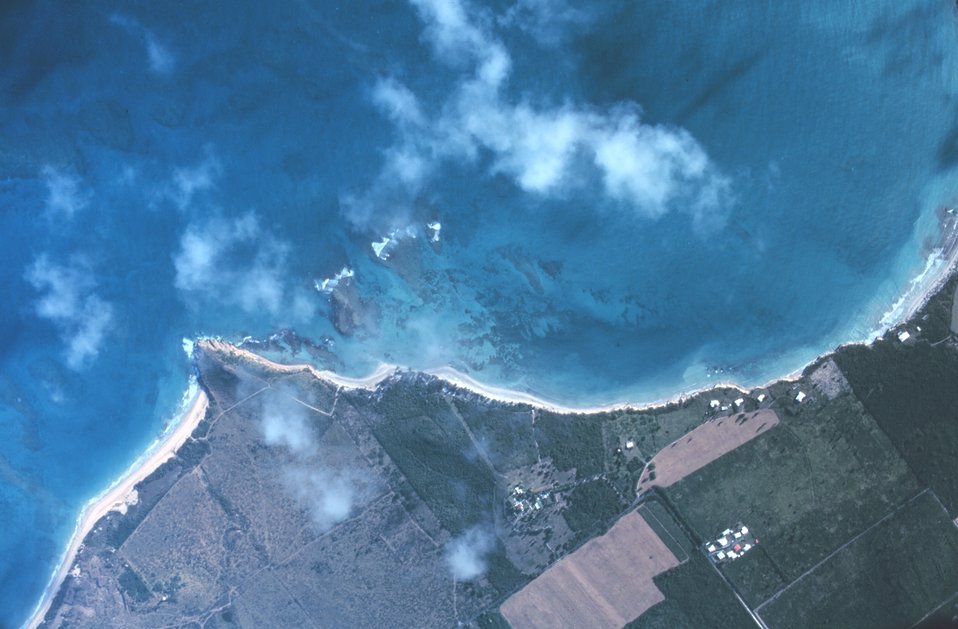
Aerial view of St. Croix coastline